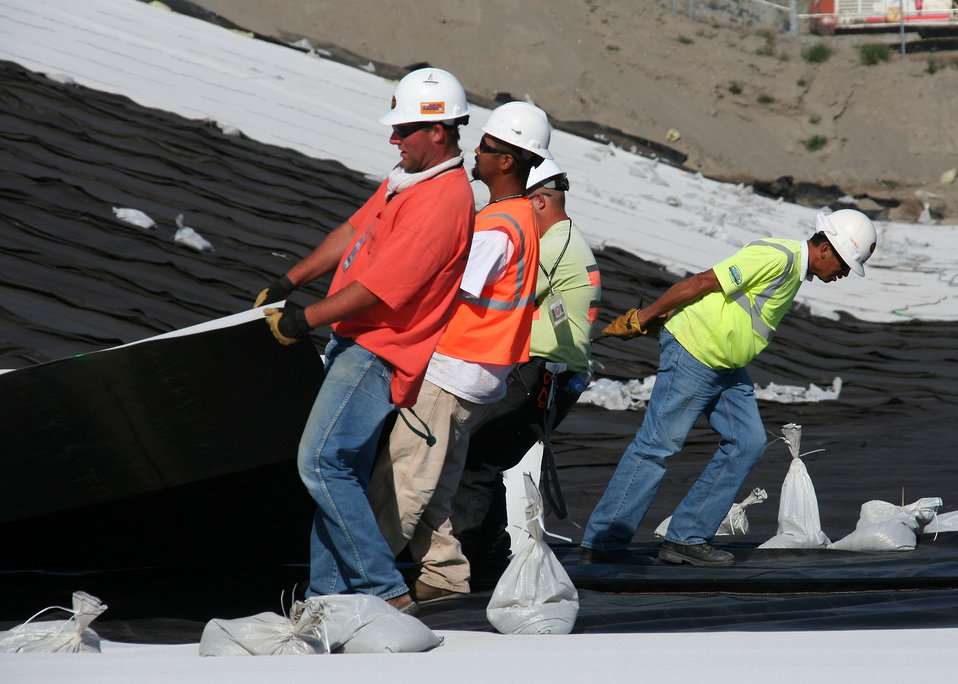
Progress at Hanford Site

Workers install a liner in a disposal facility at the Hanford Site to protect the groundwater from contamination. The Recovery Act is funding the expansion of the facility to increase its capacity by 50 percent, enough to hold more than 16 million tons of low-level waste from environmental cleanup activities at the Hanford Site.